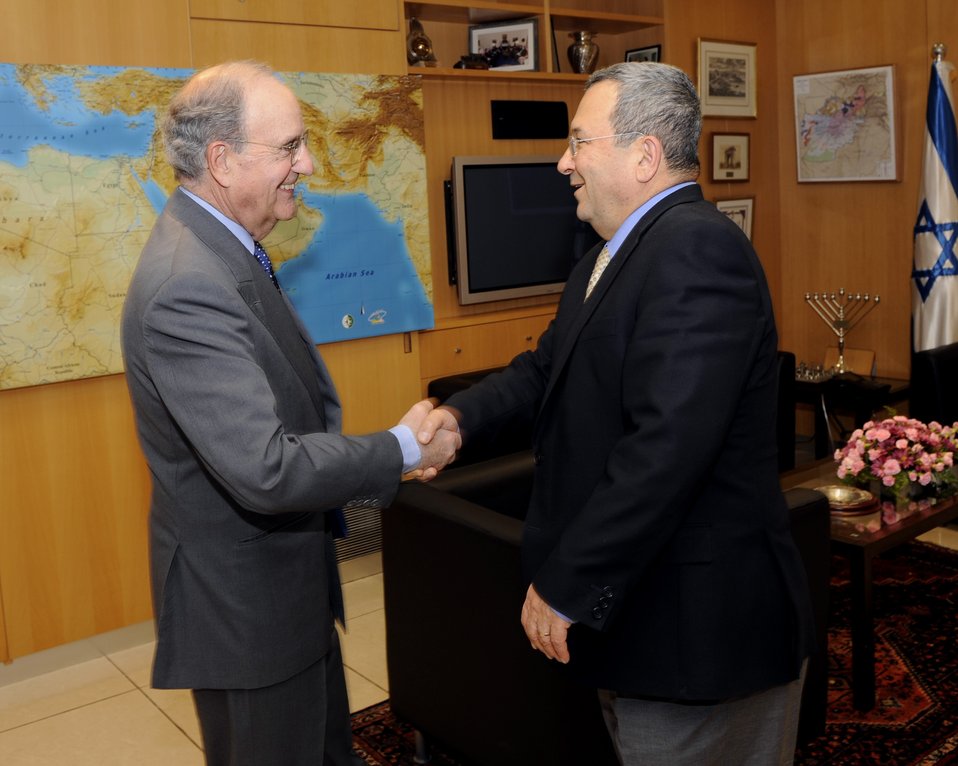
Special Envoy Mitchell Shakes Hands With Israeli FM Ehud Barak

Special Envoy for Middle East Peace George Mitchell meets with Israeli Foreign Minister Ehud Barak at the Israeli Ministry of Defense, Tel Aviv, Israel, May 6, 2010.